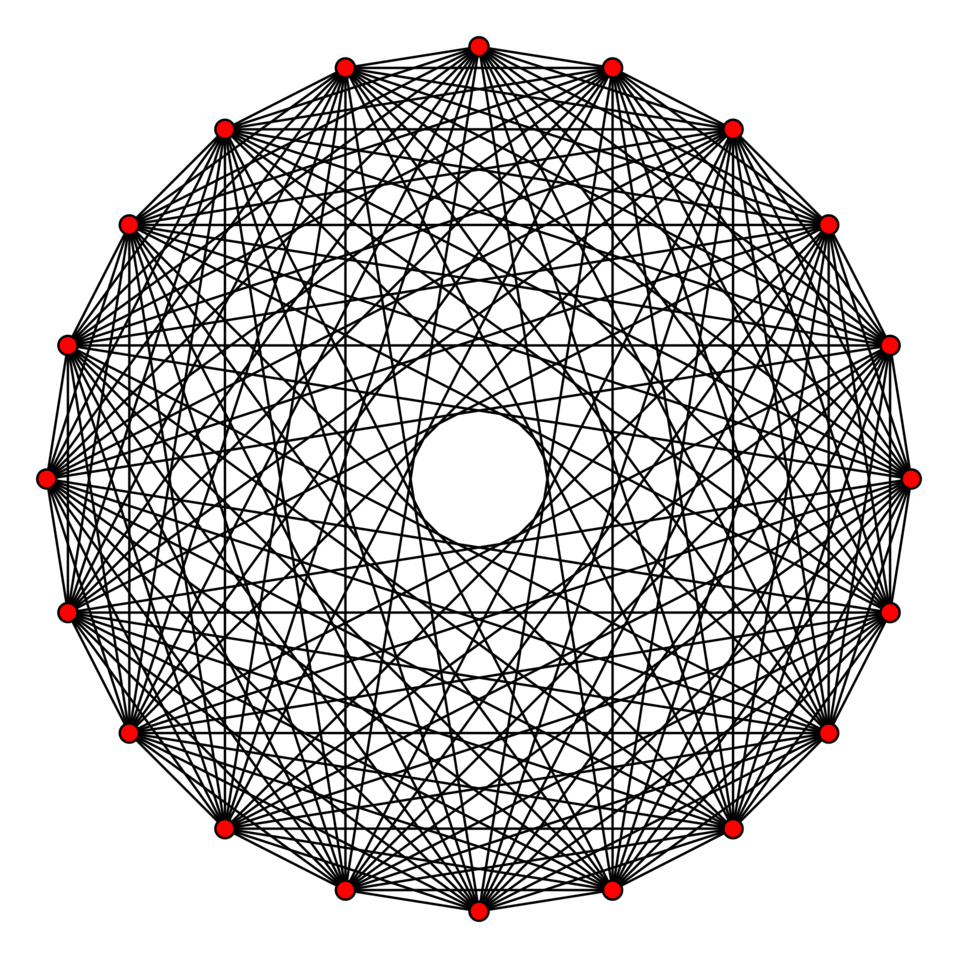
10-orthoplex graph